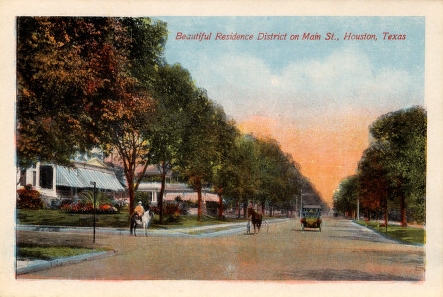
Residential District, Main Street, Houston, Texas